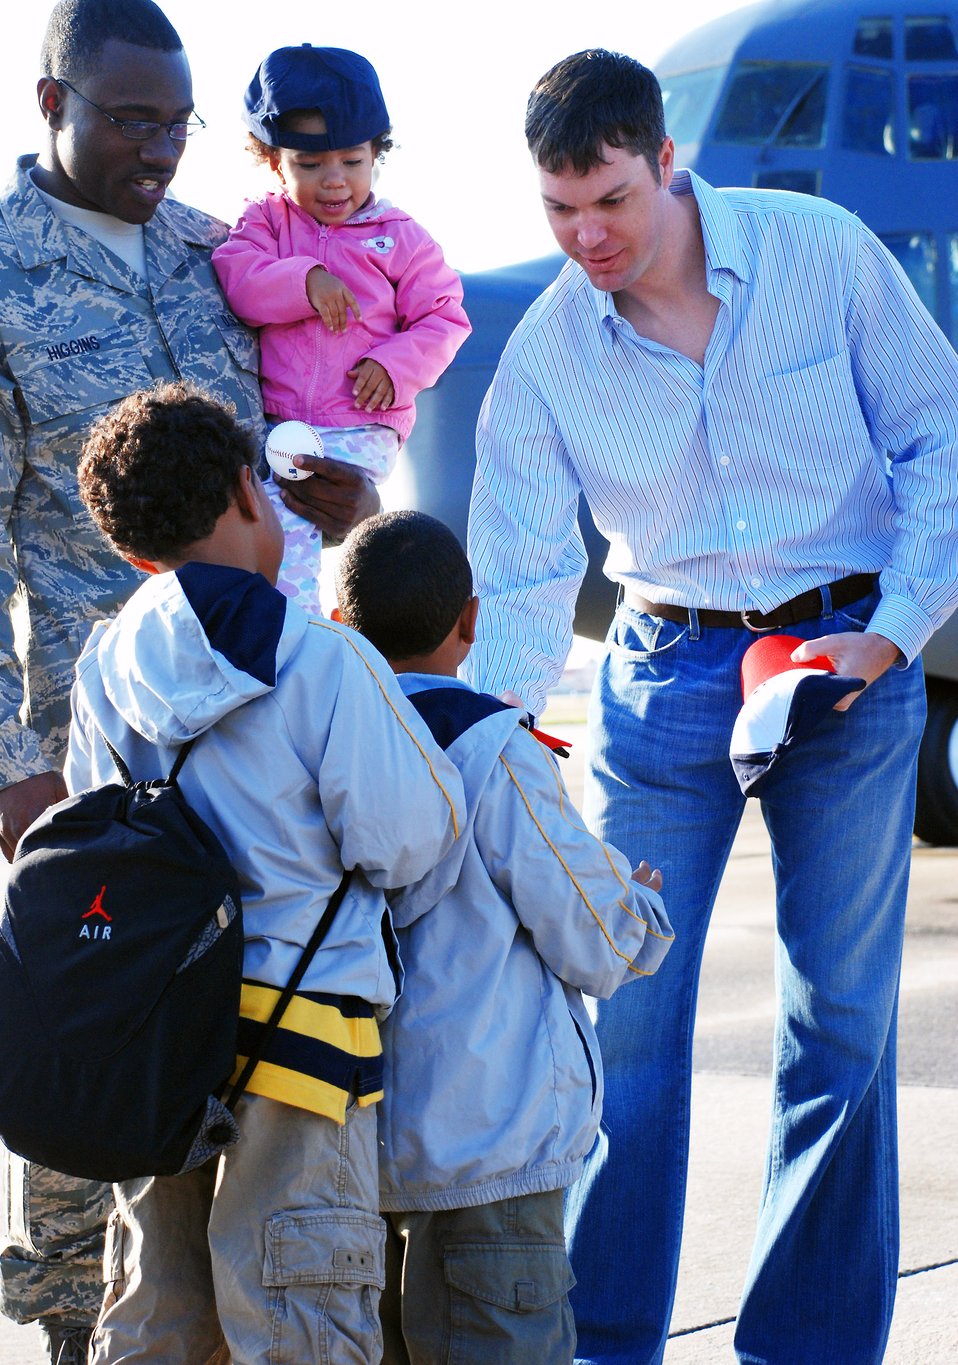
Reservist deploy, receive 'National' sendoff

John Patterson, a pitcher for Major League Baseball's Washington Nationals, hands out hats Feb. 20 to children of deploying Air Force reservists at Patrick Air Force Base, Fla. The Nationals play their spring-training games at nearby Space Coast Stadium.